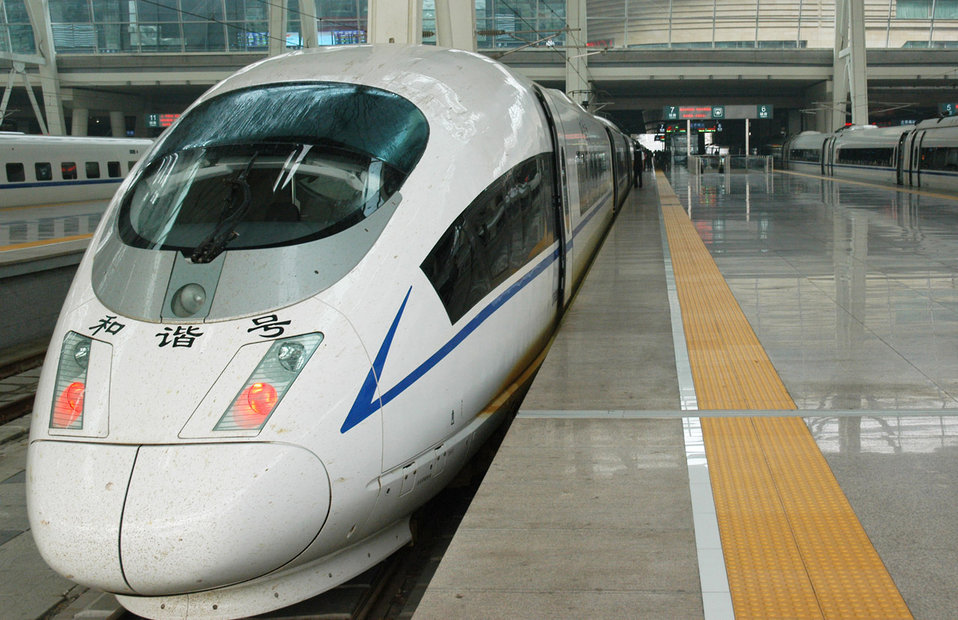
Chinese high-speed train

High-speed train at beijing station.